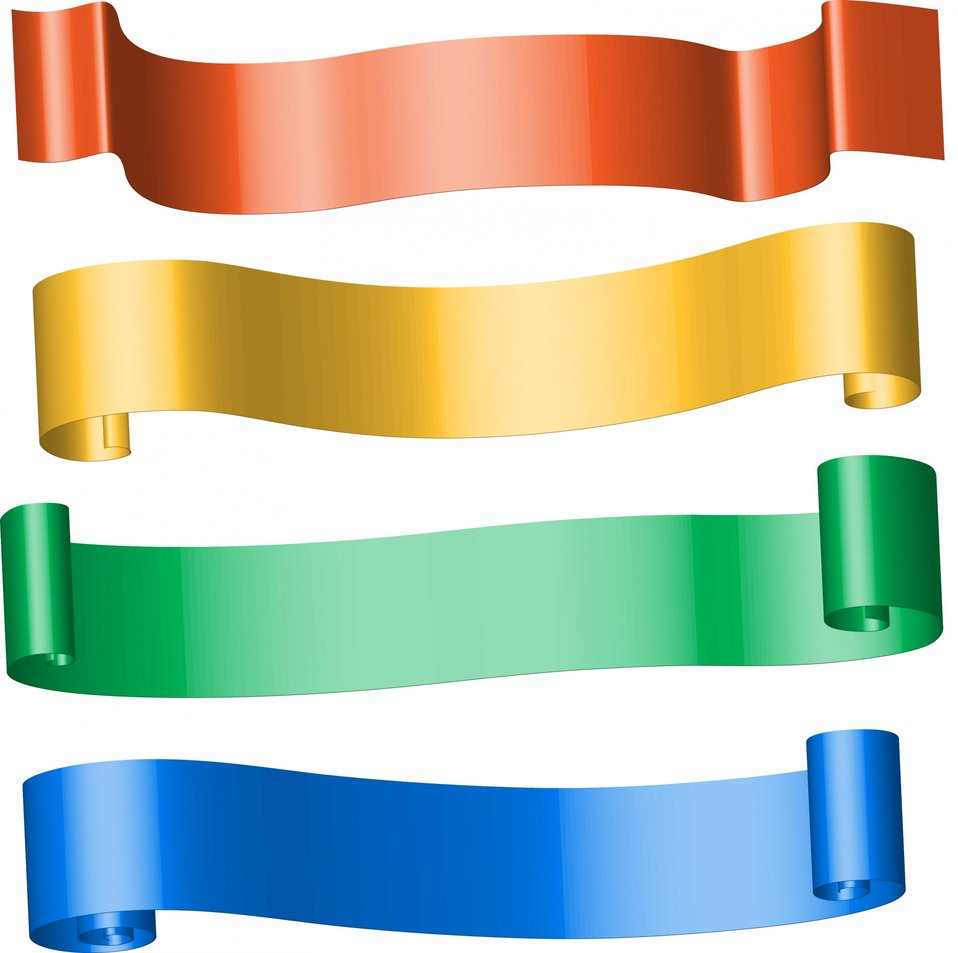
Colour ribbon banners

Digitally created set of four ribbon page banners in different colours and shapes..